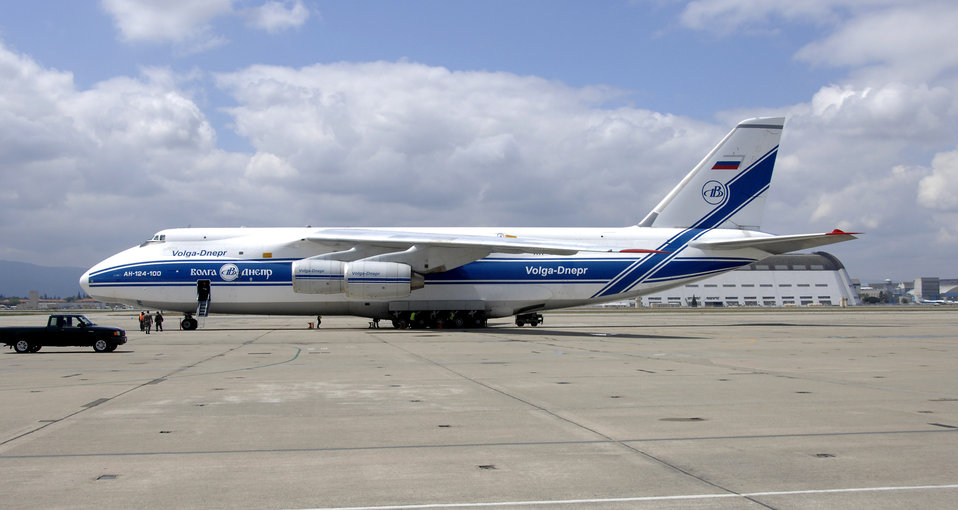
Russian aircraft transports ANG rescue helicopters

A Russian Volga-Dnepr AN-124 long-range heavy transport aircraft is parked April 20 at Moffett Federal Airfield, Calif. The contracted AN-124 transported 129th Rescue Wing deployment cargo to Afghanistan because the high operations tempos of Operations Iraqi Freedom and Enduring Freedom have kept C-17 Globemaster III and C-5 Galaxy aircraft fully engaged.